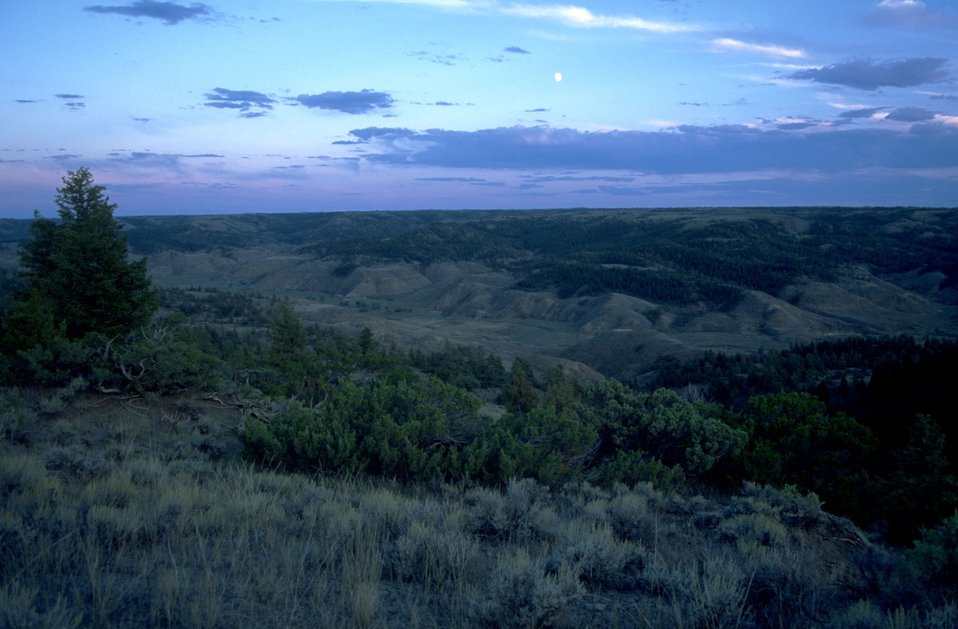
Clouds, sky over the Missouri Breaks